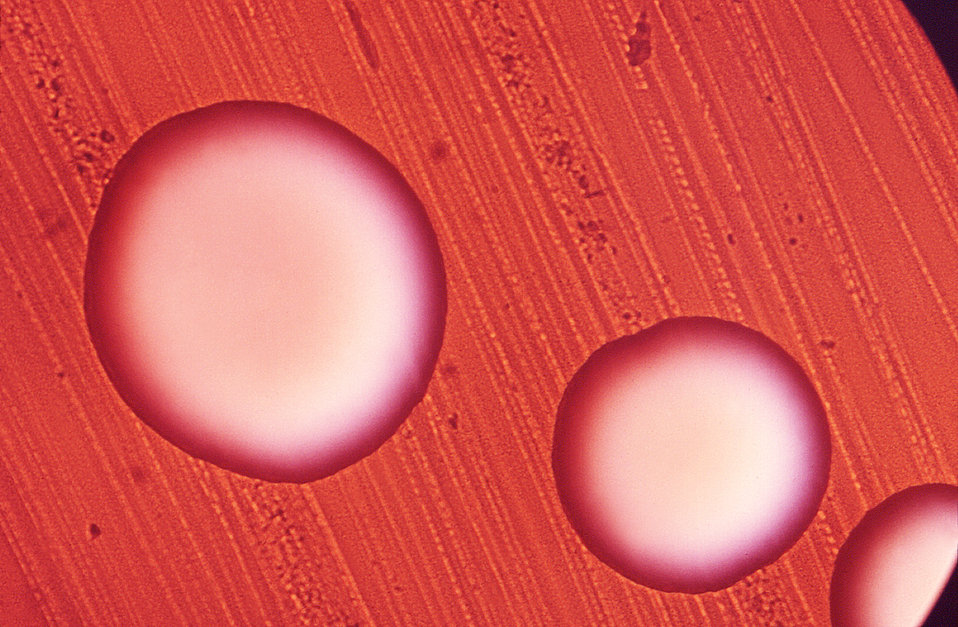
Under a very low magnification of 9X, this image depicts some of the colonial morphology exhibited by three colonies of Gram-positive Bacterionema matruchotii bacteria, of the strain W-1113.